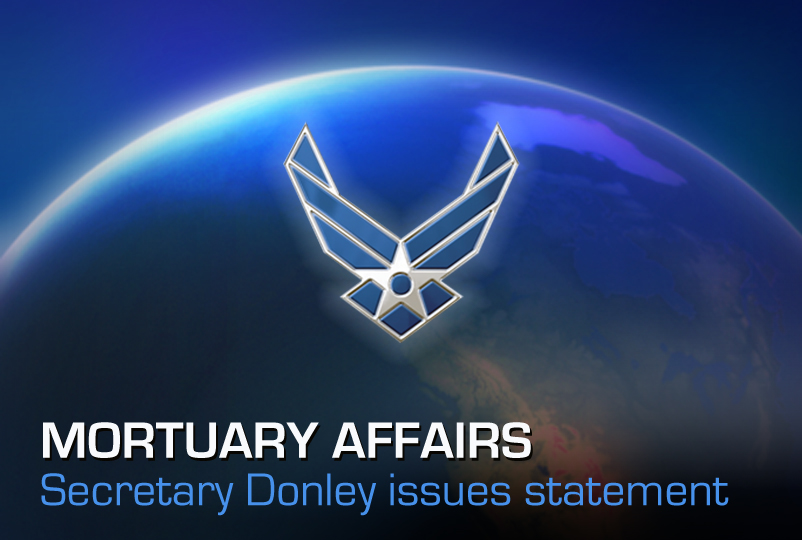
Mortuary Affairs